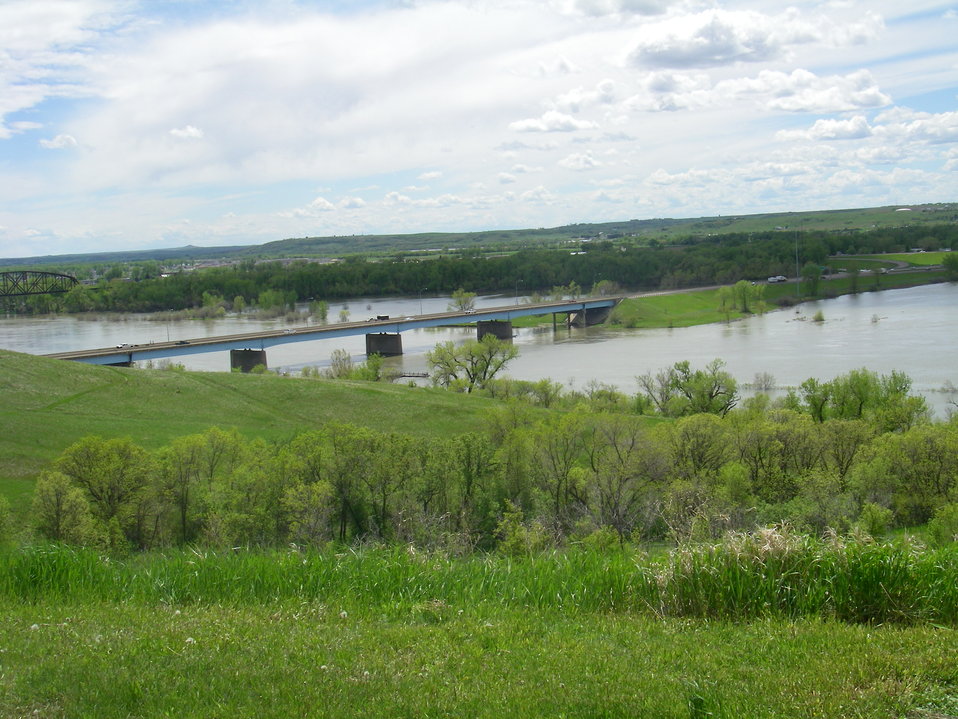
Rising Water on the Missouri River

View of the rising Missouri River. With planned releases from the dam expected to nearly double the river’s flow, more flooding is expected.